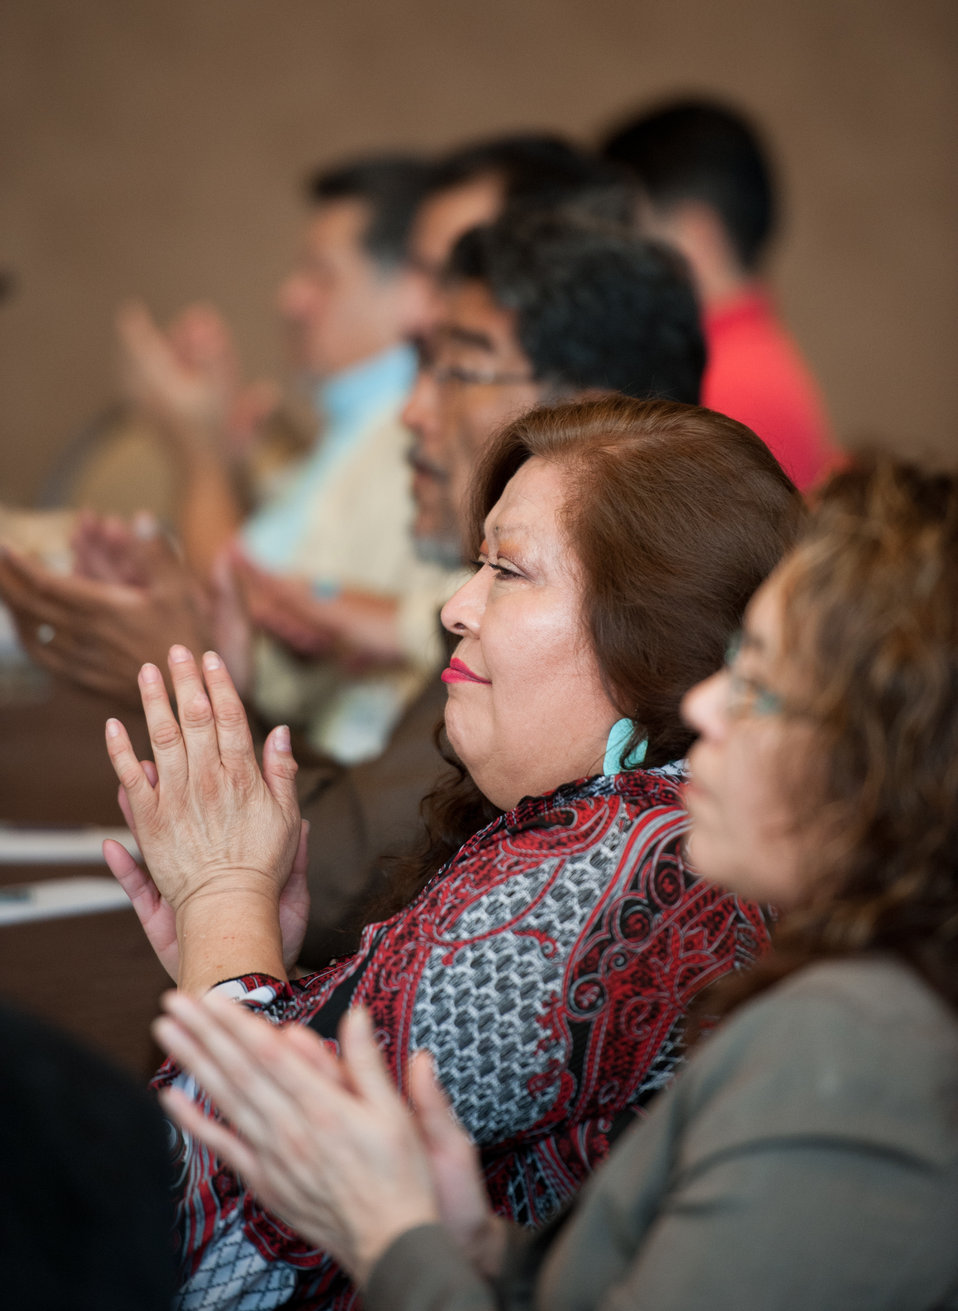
Indian Transmission Forum

Attendees at the DOE Office of Indian Energy Tribal Leader Energy Forum on transmission held February 2012 in Denver, Colorado.